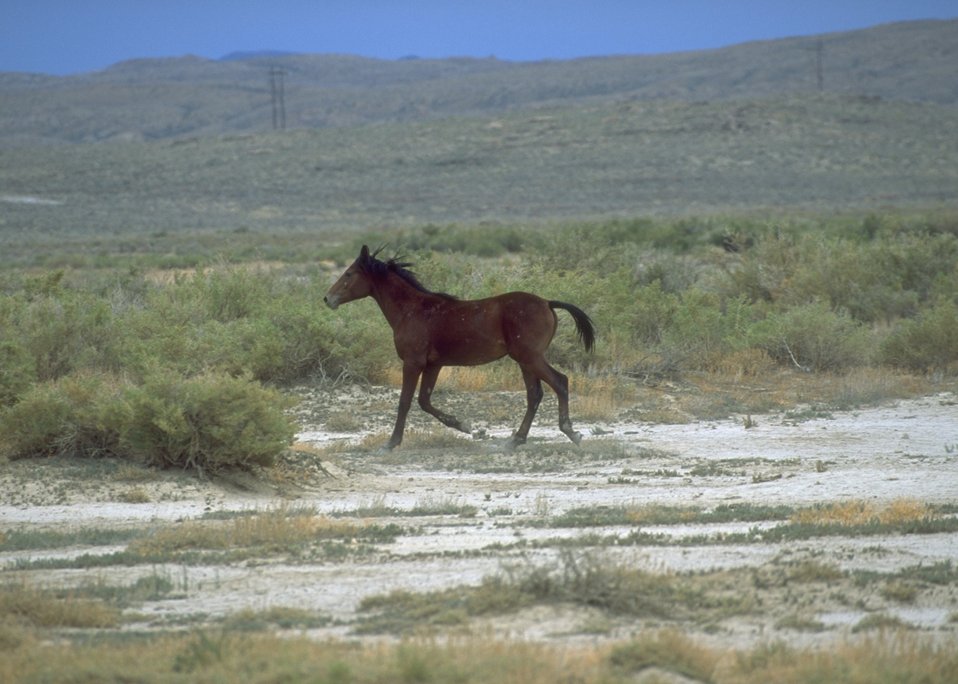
Wild horses, Rock Springs Field Office.